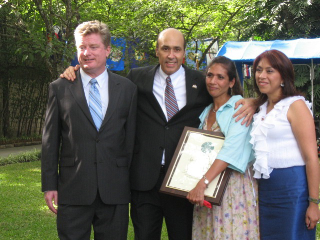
July 4th Celebration at U.S. Embassy in Honduras

Deputy Chief of Mission Simon Henshaw, U.S. Ambassador to Honduras Hugo Llorens, and Mrs. Lisett Llorens honor Office Management Specialist Janie Carpenter with a Superior Honor Award at the end of the Independence Day celebration at the Ambassador’s residence in Tegucigalpa, Honduras, on July 2, 2010.